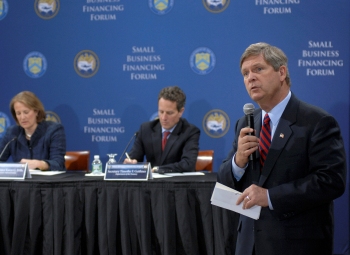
Treasury and SBA Host a Small Business Financing Forum

After leading one of the breakout sessions, Secretary of Agriculture Tom Vilsack discussed how the USDA can be a partner in helping expand credit to small businesses in rural areas.